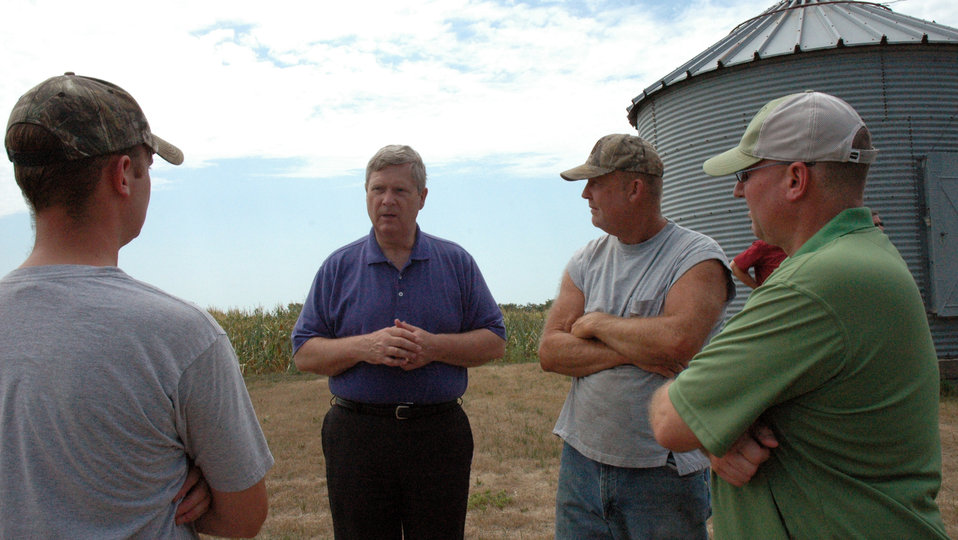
Agriculture Secretary Tom Vilsack tours Eric Cress' farm to examine crop damage caused by the drought near Center Point, IA on Monday, July 23, 2012. Eric and his father Dale said their farm in eastern Iowa is running around seven inches behind normal rain levels for this time of year. On July 20, 2012, the U.S. Drought Monitor reported that 88 percent of the nation’s corn and 87 percent of the soybeans are in drought-stricken areas.